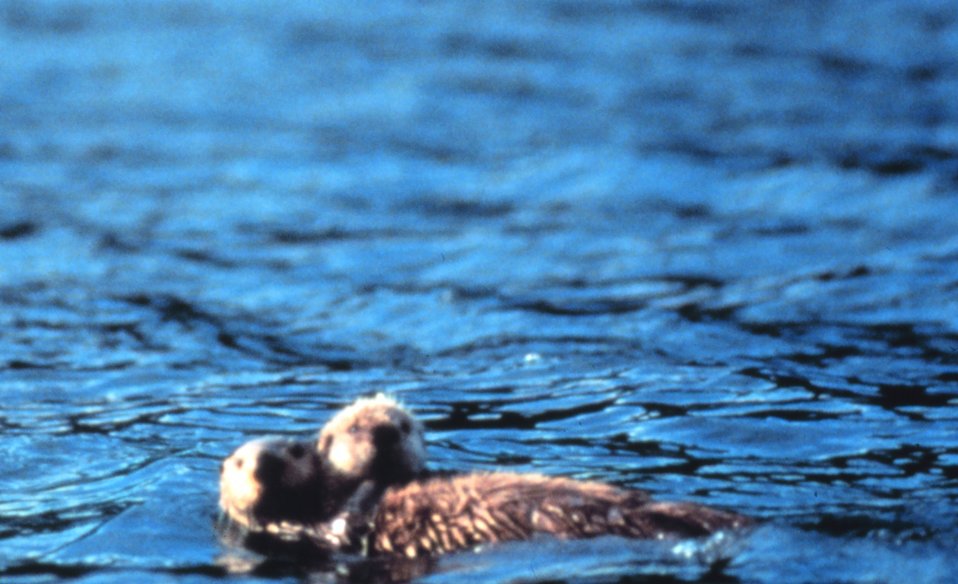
Sea otters on surface